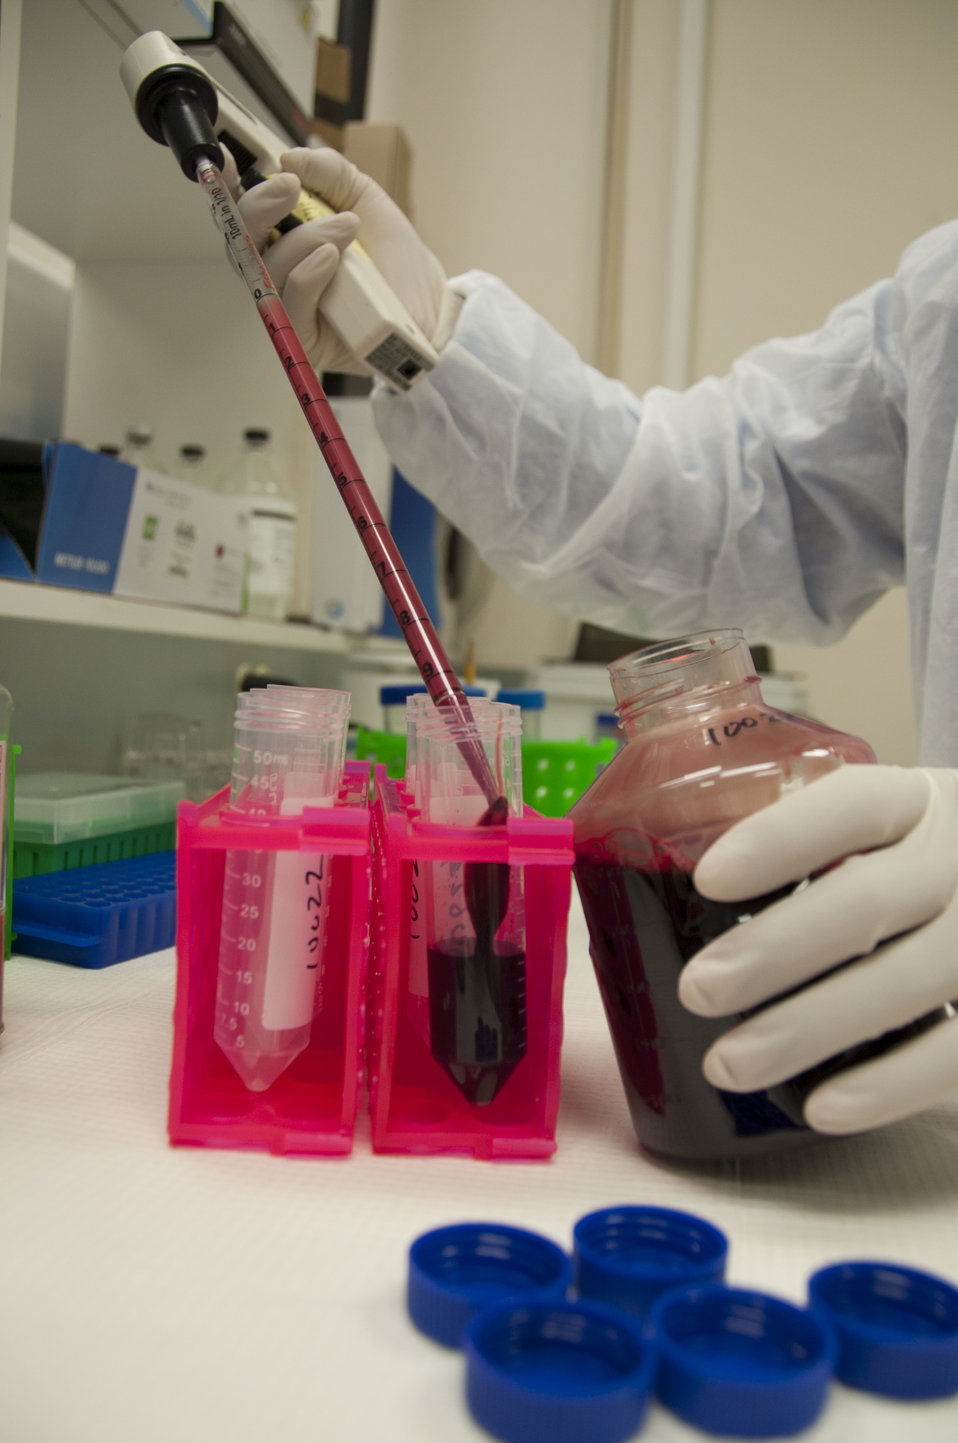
Blood Research: Saving Lives (8311)

Jason Liu, Ph.D., a laboratory chief at FDA’s Office of Blood Research and Review, transferring blood to 50 ml tubes as he prepares to isolate blood components for his research. Similarly, a unit of whole blood for transfusion can be separated, for example, into platelets and red blood cells. The separated components can be used for different patients with different needs. FDA is responsible for the safety of our nation’s blood supply and is at the forefront of evaluating and encouraging innovative technologies for protecting it.

Read this Consumer Update to learn more: Advances in Saving Lives with Blood